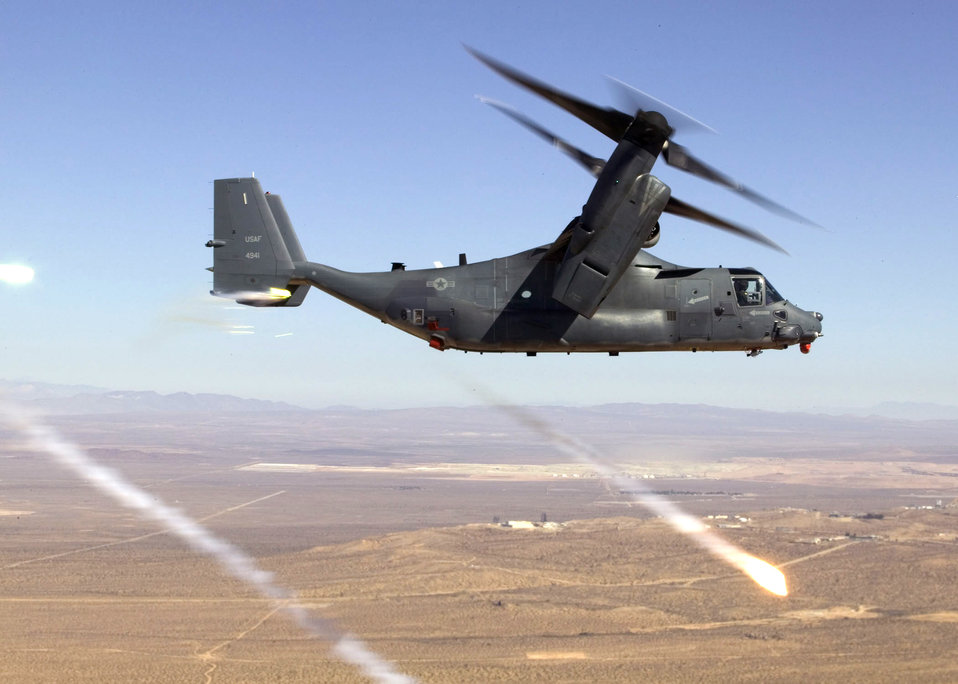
Playing with fire

OVER EDWARDS AIR FORCE BASE, Calif. -- The CV-22 Osprey fires countermeasures out of one of the rear buckets, or storage areas for countermeasures, during a safe-separation test over the precision impact range area here.